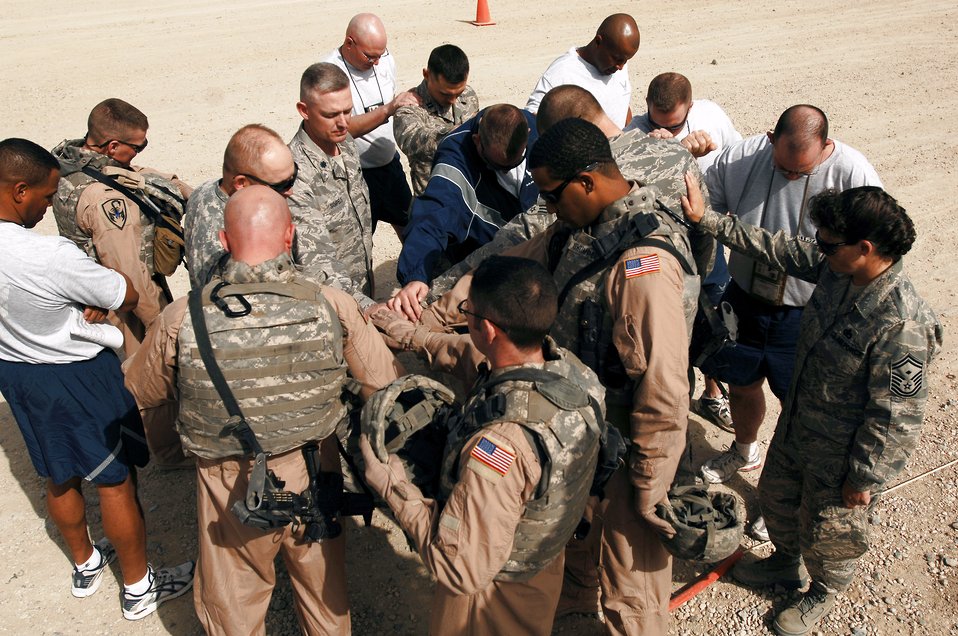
'Keep us safe'

Airmen from the 586th Expeditionary Logistics Readiness Squadron at an Army camp in Southwest Asia bow their heads March 2 during a prayer before heading off on a convoy. The Airmen are